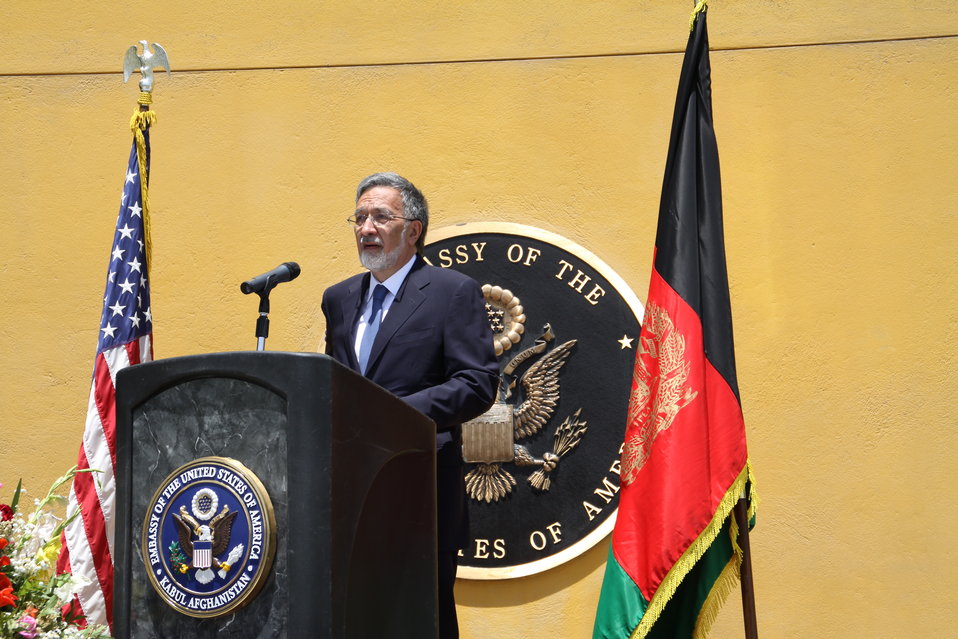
Kabul Official July 4th Celebration